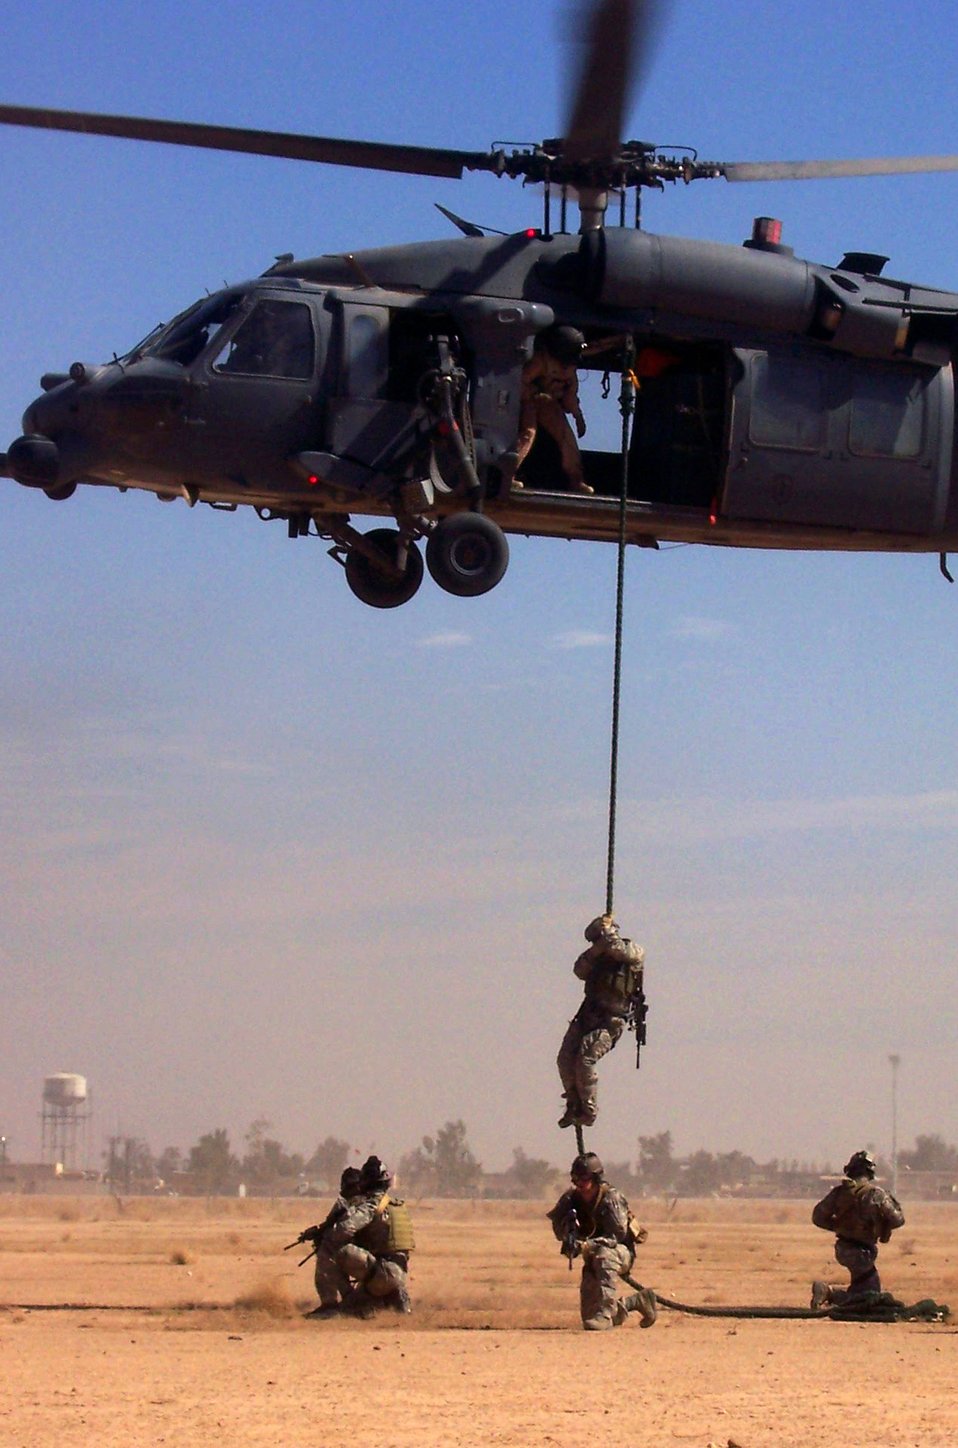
Balad Airmen rescue U.S. teachers in Iraq

Servicemembers from the 64th Expeditionary Rescue Squadron fast rope from an HH-60G Pave Hawk helicopter and secure a 360-degree area March 6 at Balad Air Base, Iraq. Members of the squadron rescued two U.S. teachers who got lost while hiking in Iraq March 2. The rescue personnel are deployed from Nellis Air Force Base, Nev., and Moody Air Force Base, Ga.